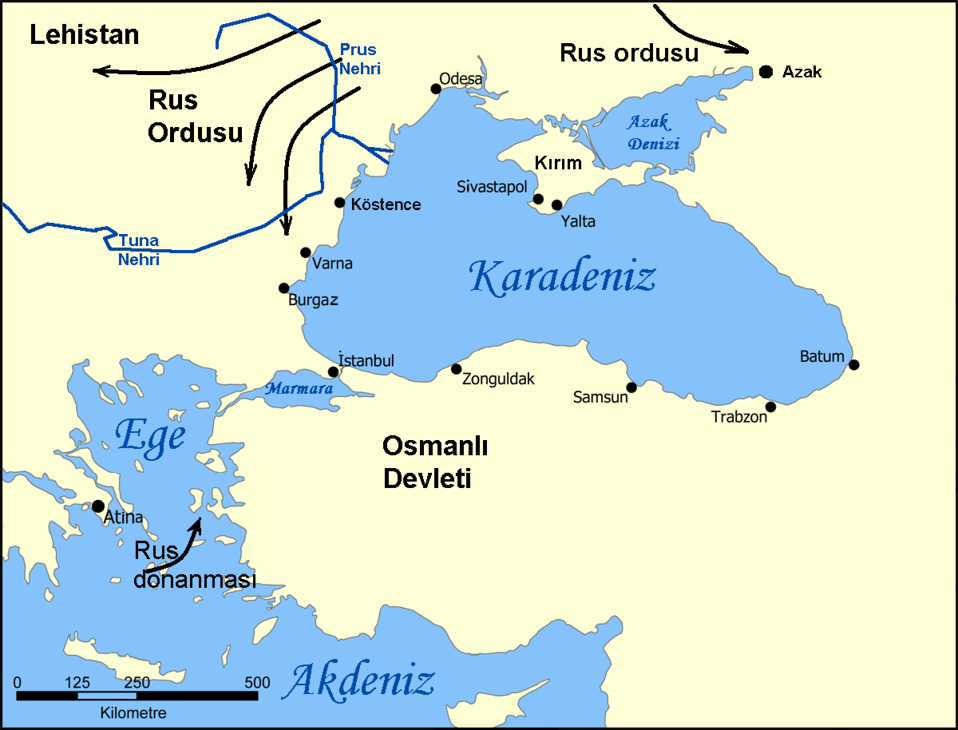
Türkçe: 1768-1774 Osmanlı-Rus Savaşı haritası. Kendim çizdim. ----Vikiyazar 16:55, 5 Eylül 2006 (UTC)